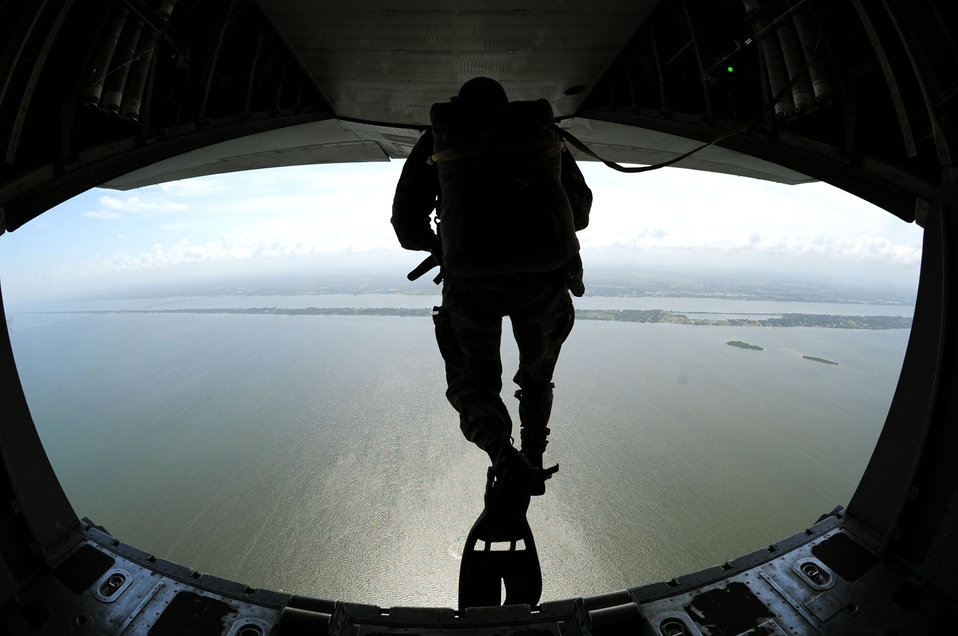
Uruguayan armed forces train with rescue reservists

Pararescuemen and others from the Uruguayan armed forces trained on the Banana River near Patrick Air Force Base, Fla., with Air Force Reserve reservists from the 920th Rescue Wing. The Uruguayans traveled to Florida Aug. 29 through Sept. 2, 2010, to improve their rescue skills over water.